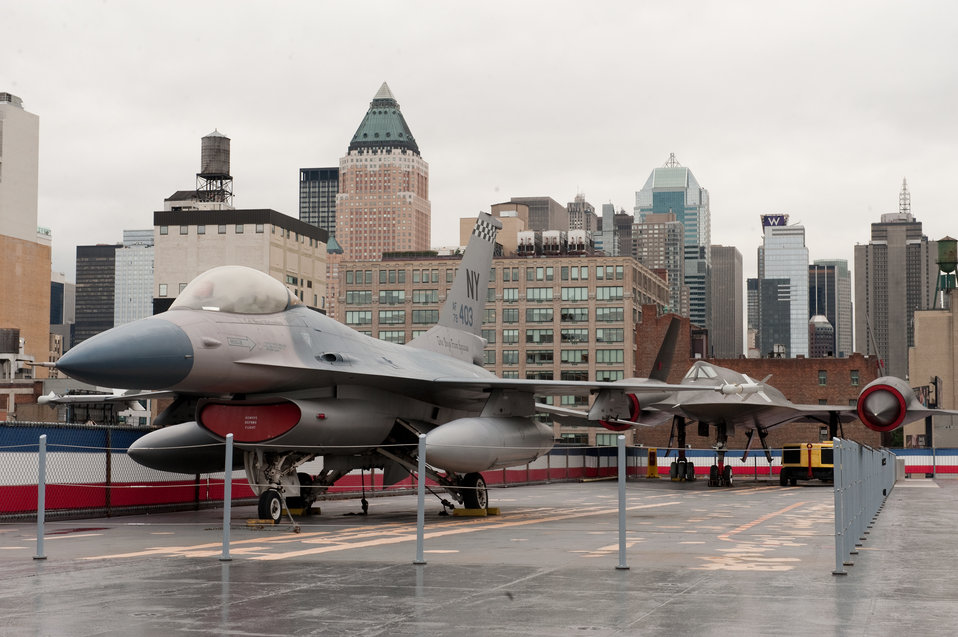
Air Force Week New York City Proclamation Ceremony

During the Air Force Week New York City proclamation ceremony at the USS Intrepid on Aug. 24, 2010. The event at the Intrepid Sea, Air & Space Museum was highlighted by a six-ship flyover by the USAF Thunderbirds. The Honorable Michael Donley, Secretary of the Air Force attended, along with General Raymond Johns, Commander of Air Mobility Command. The Police Commissioner of the City of New York, the Honorable Raymond Kelly, represented NYC. Mr. Greg Kelly of